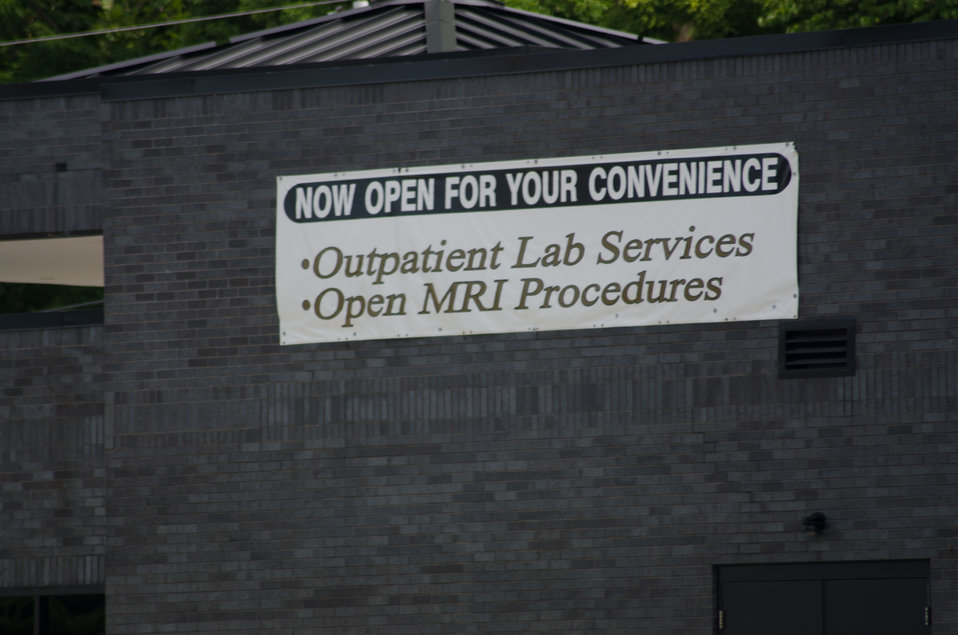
Detour, arrow, construction and temporary signs are posted on and across the re-utilized buildings and properties at various ends of multiple parking lots are common sights at the Pikeville Medical Center on Tuesday, July 12, 2011, in Pikeville, KY. Nearby, the above ground construction phase of Pikeville Medical Center (PMC) expansion project is underway, after months of infrastructure construction and rain delays. This is one of Kentucky’s largest American Recovery and Reinvestment Act (ARRA) projects. The $44.6 million Community Facilities Loan will finance construction of a new medical office building and parking garage.